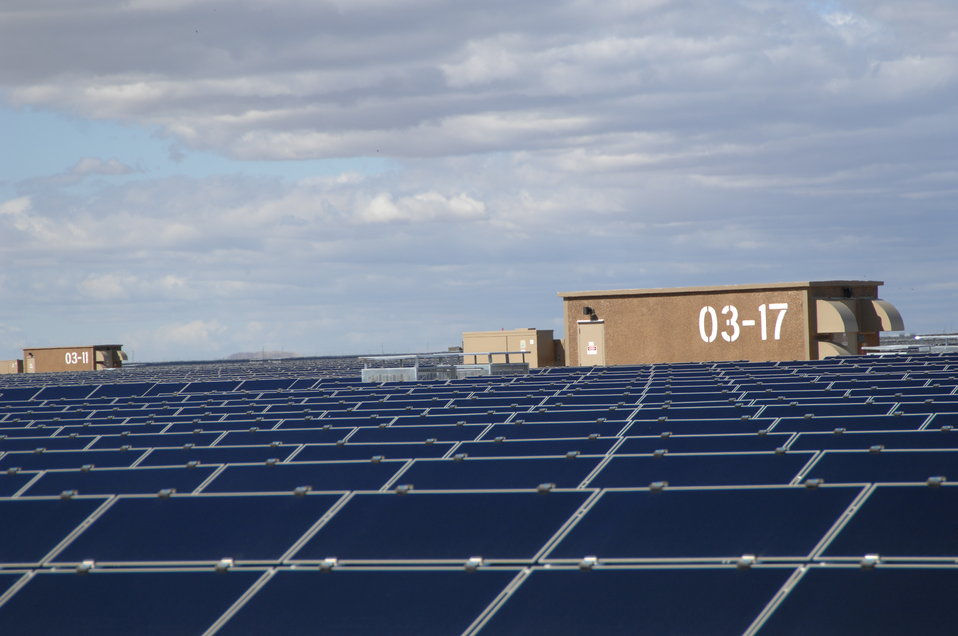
Solar Panels at Topaz Solar 5